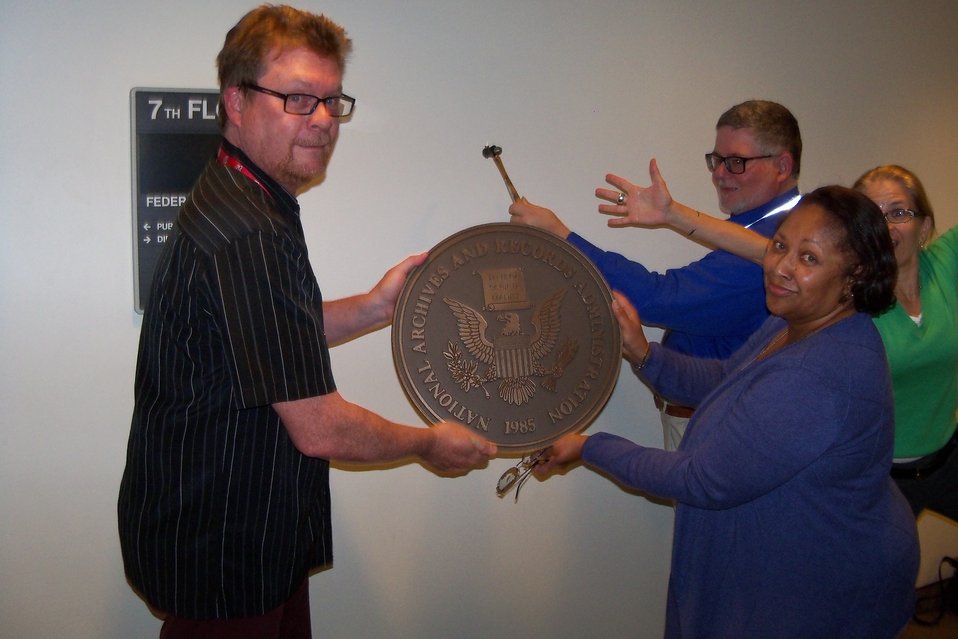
Brad Brooks, Brian Swidal, Laurice Clark, and Amy Bunk hanging up the NARA seal in OFR facility; Location: Office of the Federal Register, Washington, D.C.